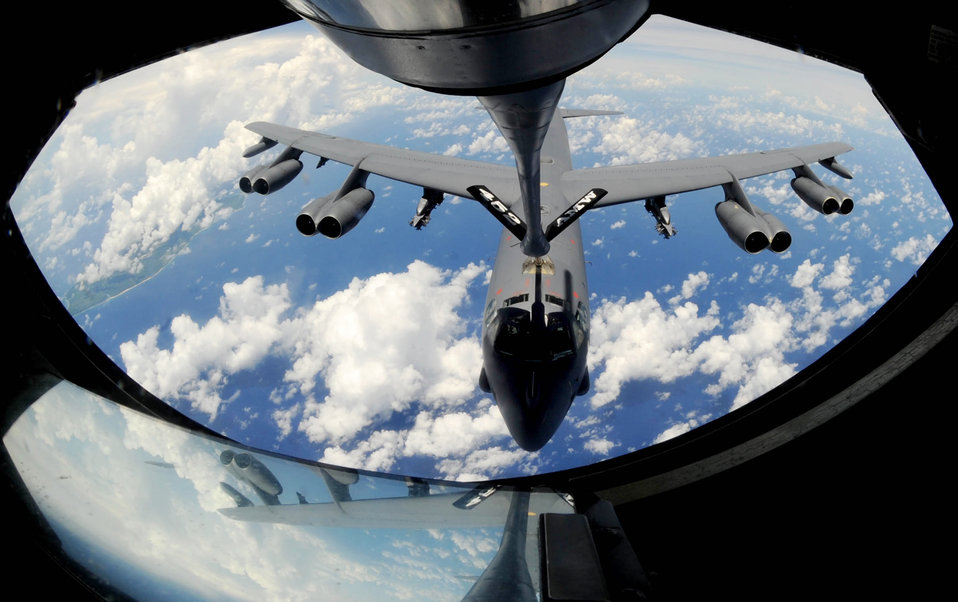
Ready for fuel

A B-52 Stratofortress approaches the boom of a KC-135 Stratotanker over the Pacific Ocean Aug. 14. The bomber is taking part in the 2009 Inaugural Turkey Shoot with KC-135s and F-22 Raptors. The event allows air expeditionary units to plan and execute tactical missions with airframes that don't regularly train together.